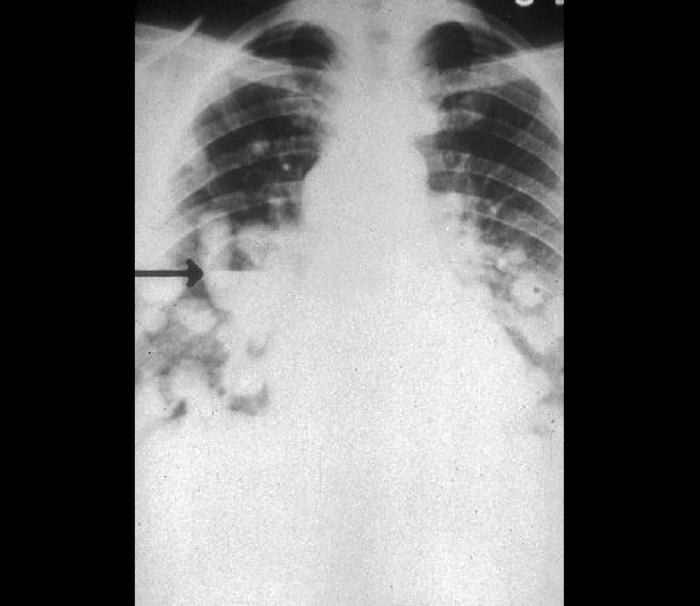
Chest radiograph showing miliary densities in both lung fields plus thin-walled cavity with fluid level. Histoplasmosis.